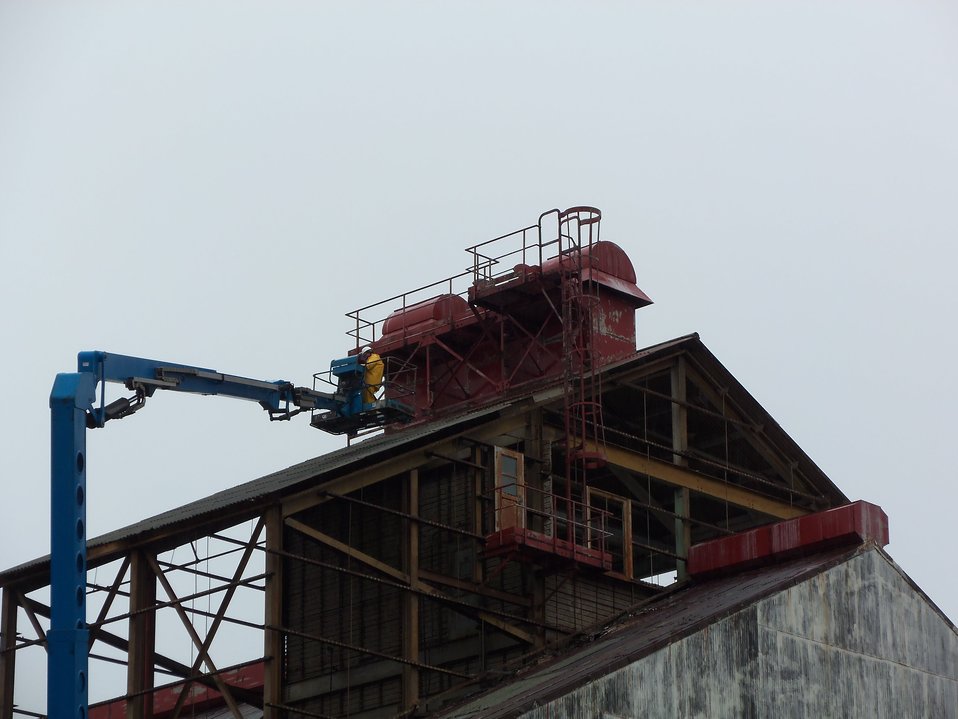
Workers on roof of Building 401.

Activities from the Niagara Falls Storage Site, which is associated with the former Lake Ontario Ordnance Works. Formerly Utilized Sites Remedial Action Program (FUSRAP), a program initiated in 1974 to identify, investigate and clean up or control sites that were part of the Nation's early atomic energy and weapons program. Activities at the sites that are eligible for FUSRAP were conducted by Manhattan Engineer District (MED) or the Atomic Energy Commission (AEC), both predecessors of the Department of Energy (DOE). The U.S. Army Corps of Engineers was assigned management of FUSRAP by Congress in 1997.